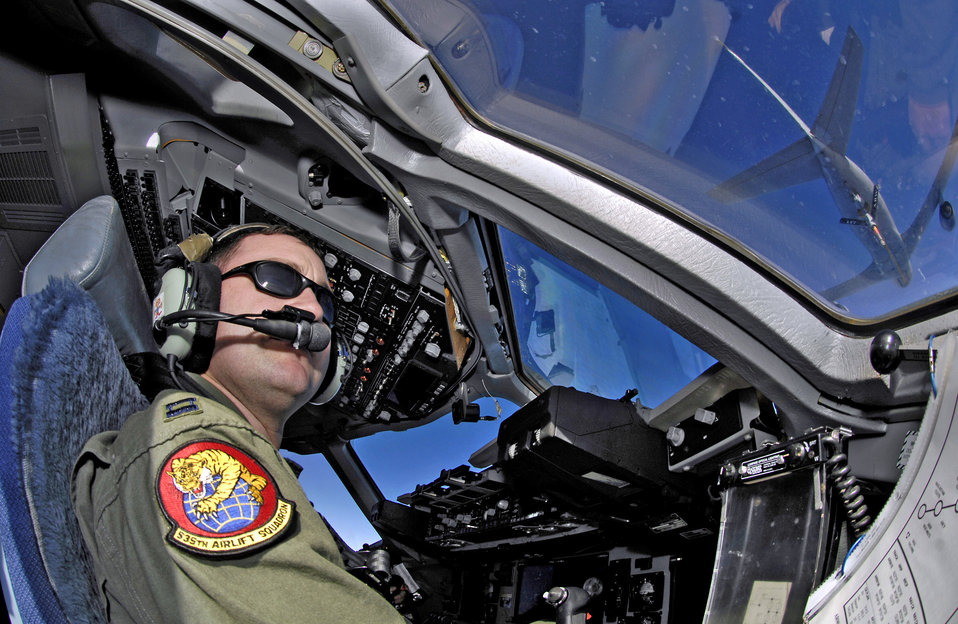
Hickam's C-17s deliver anywhere

Capt. Corey Reed pulls his C-17 Globemaster III up to a KC-135 Stratotanker Jan. 7 during aerial refueling practice over Oahu, Hawaii. Capt. Reed is from the 535th Airlift Squadron, Hickam Air Force Base, Hawaii. The KC-135 is from the 117th Air Refueling Wing, Birmingham, Ala.